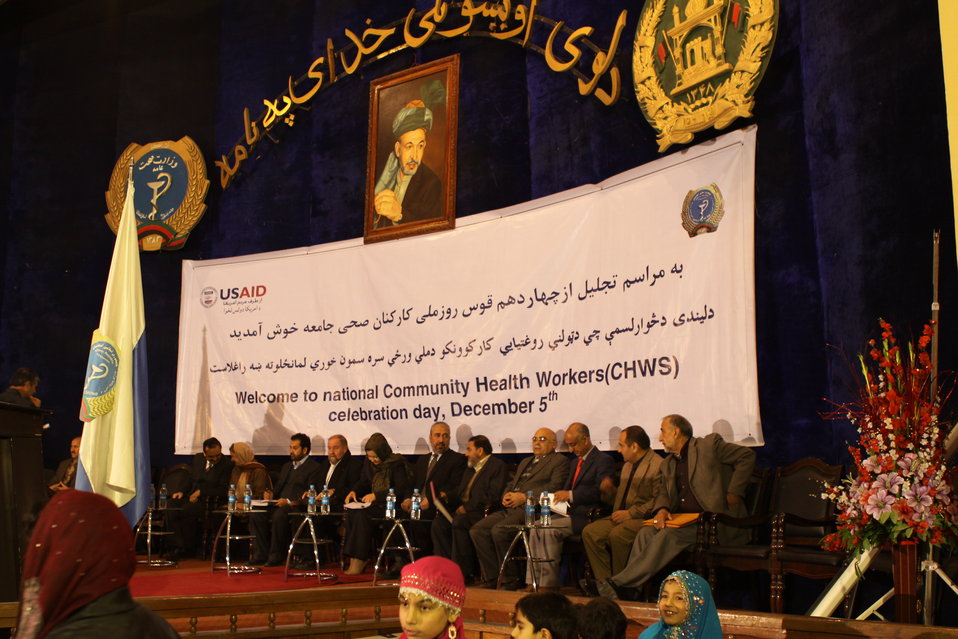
Community Health Workers Celebrated

Kabul, Afghanistan | December 5, 2010 — In support of the United Nations designated International Volunteer Day for Economic and Social Development, Afghanistan’s Ministry of Public Health celebrated its annual Community Health Worker Day today. Acting Minister of Public Health Dr. Suraya Dalil, USAID Senior Deputy Mission Director Robert Hellyer, other government officials, and international donors joined in recognizing the critical contribution of community health workers in Afghanistan and encouraging them to continue their voluntary support to their communities.
The event praised the contributions of the more than 22,000 volunteers throughout the country who deliver community level health-education, counseling, and services out of village health posts located in private homes. The Ministry of Public Health envisioned that community-based healthcare programs will actively encourage communities and families to adopt healthy lifestyles and behaviors, and provide families access to high quality and socially acceptable preventative medicine and life-saving services.
“We have 22,000 community health workers in Afghanistan that are able to implement the basic and standard medicines. They all have been trained through a job description,” said Minister Dalil. Addressing the health workers, she added, “I am proud and feel powerful that I have people like you.”
USAID-funded health projects collaborate closely with the Ministry of Public Health to improve the health and nutritional status of Afghans, provide quality primary healthcare, and promote healthy behaviors at the community and household-levels. USAID supported the training of more than 9,000 of the volunteer community health workers currently working in Afghanistan.
“On behalf of the American people, I congratulate the Community Health Workers for their diligence to gain the skills and knowledge necessary to serve their communities in this important role,” said USAID Senior Deputy Mission Director Hellyer. “USAID strongly supports community based health care and believes that quality community-based health services are essential to reaching Afghanistan’s Millennium Development Goals.”
To support the Basic Package of Health Services, USAID assisted in developing the community health worker training manual, helped train community health worker supervisors and master-trainers, facilitated in-service training, and produced and developed reporting tools, job aids, and education materials.